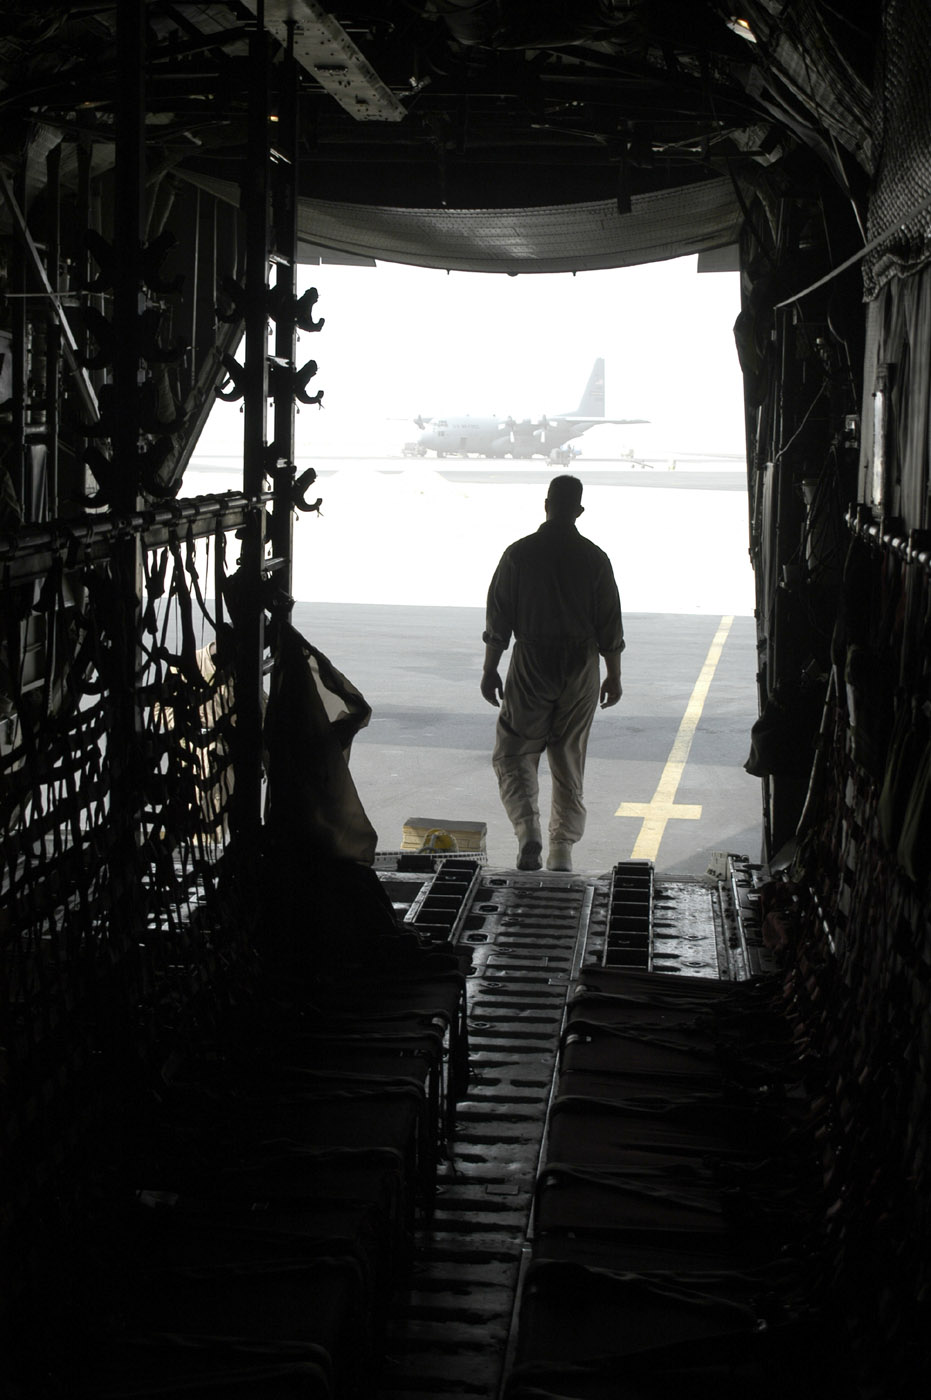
'Herc' maintenance

SOUTHWEST ASIA -- Loadmaster Staff Sgt. Pat Mortell walks out the back of his C-130 Hercules while waiting for maintainers to